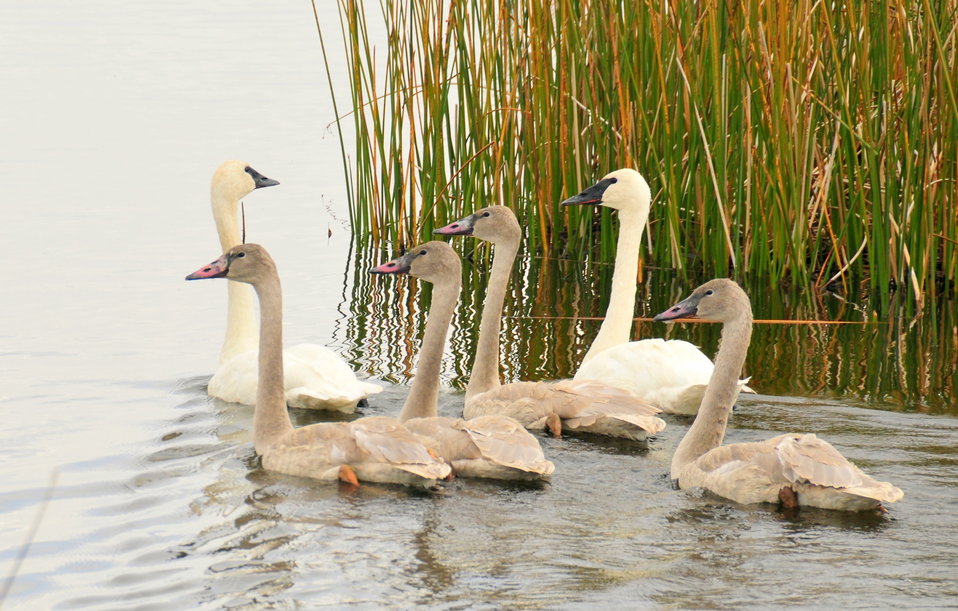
Trumpeter Swan Family Group on Seedskadee NWR

A family group of trumpeter swans on the Hawley Unit of Seedskadee NWR.